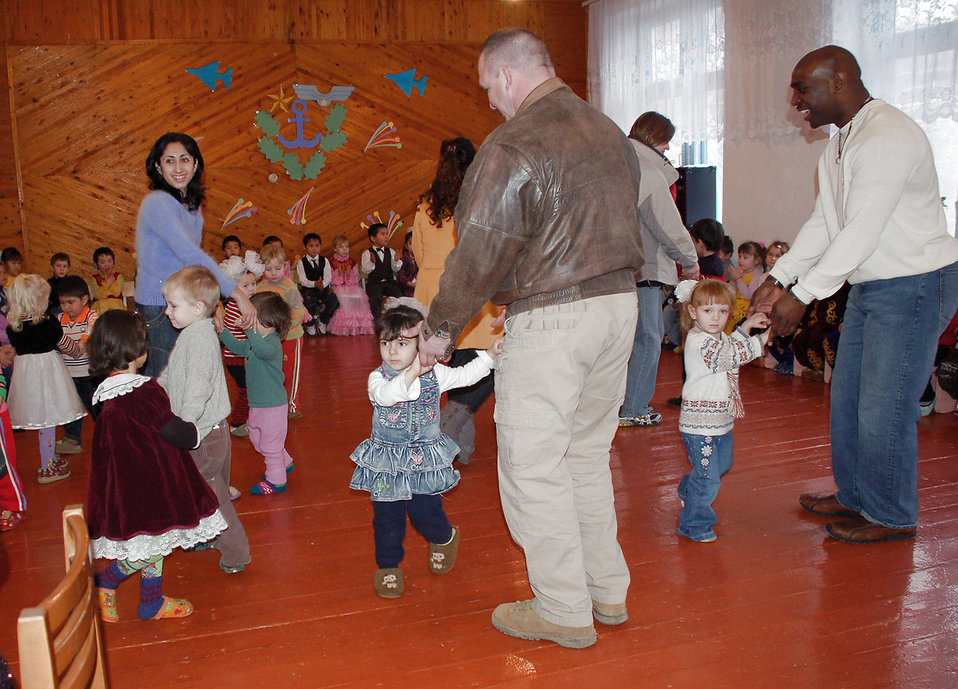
Kyrgyz children thank Manas volunteers

Kindergarteners at the Vasilievka Kindergarten School dance with Tech. Sgt. Chad West (left) and Staff Sgt. Chris Moore during a Feb. 20 visit by volunteers from nearby Manas Air Base, Kyrgyzstan. More than 75 children performed to thank the Manas AB volunteers for their support to help rebuild and improve their school over the past seven years. Sergeant West is assigned to the 376th Expeditionary Security Forces Squadron and Sergeant Moore is assigned to the 376th Air Expeditionary Wing staff.